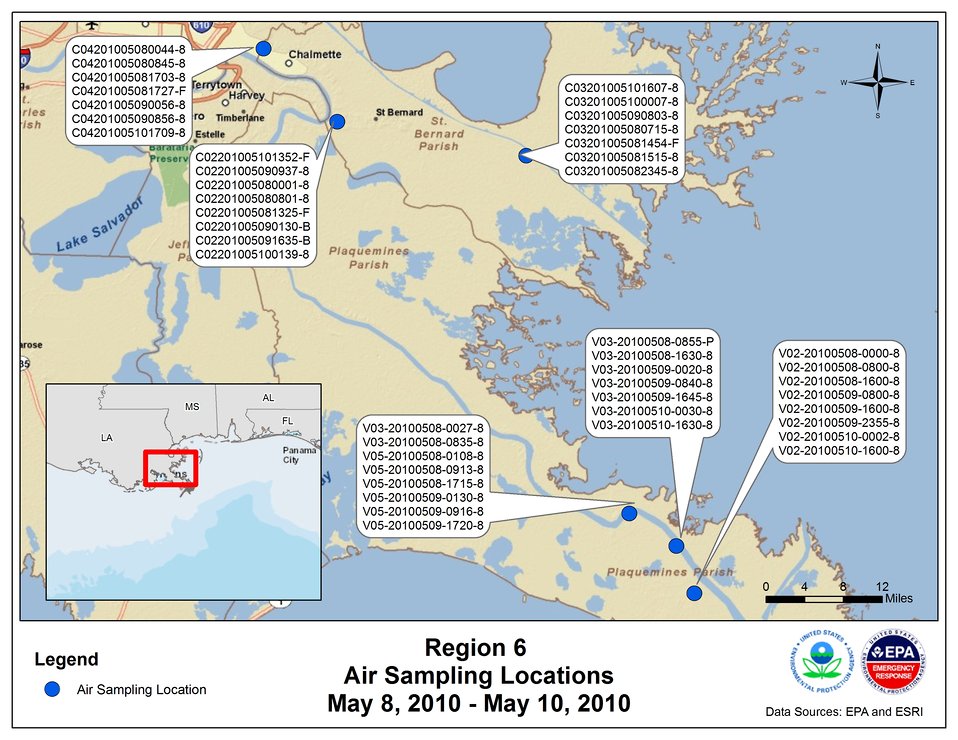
EPA Air Sampling Locations May 8-10, 2010